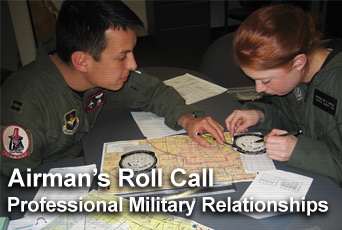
Airman's Roll Call highlights professional relationships

This week's Airman's Roll Call focuses on professional military relationships in the Air Force.